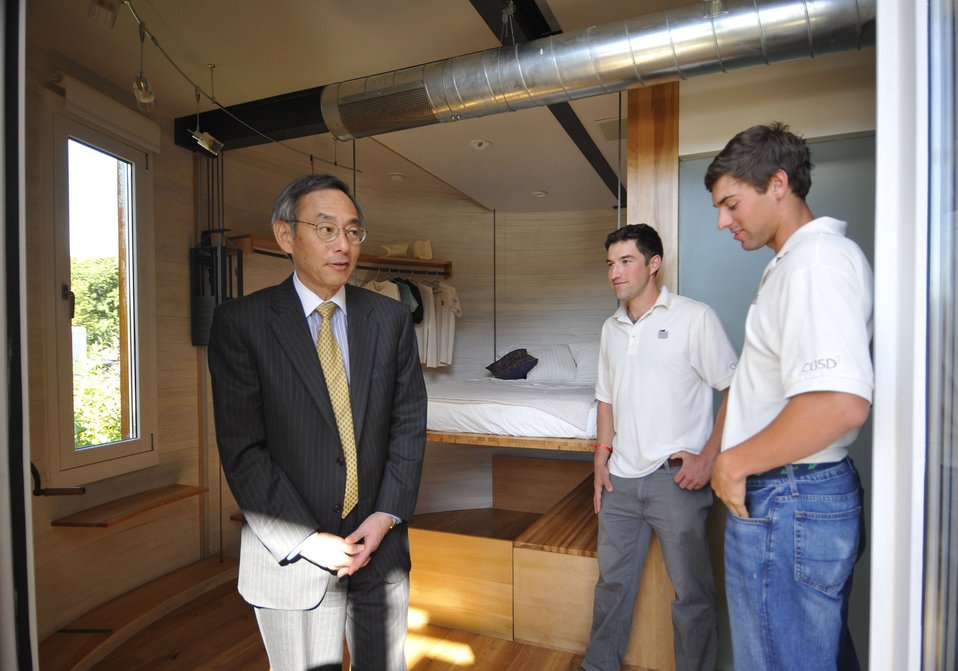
Solar Decathlon 2009 on the National Mall, with Sec. Chu

Solar Decathlon 09